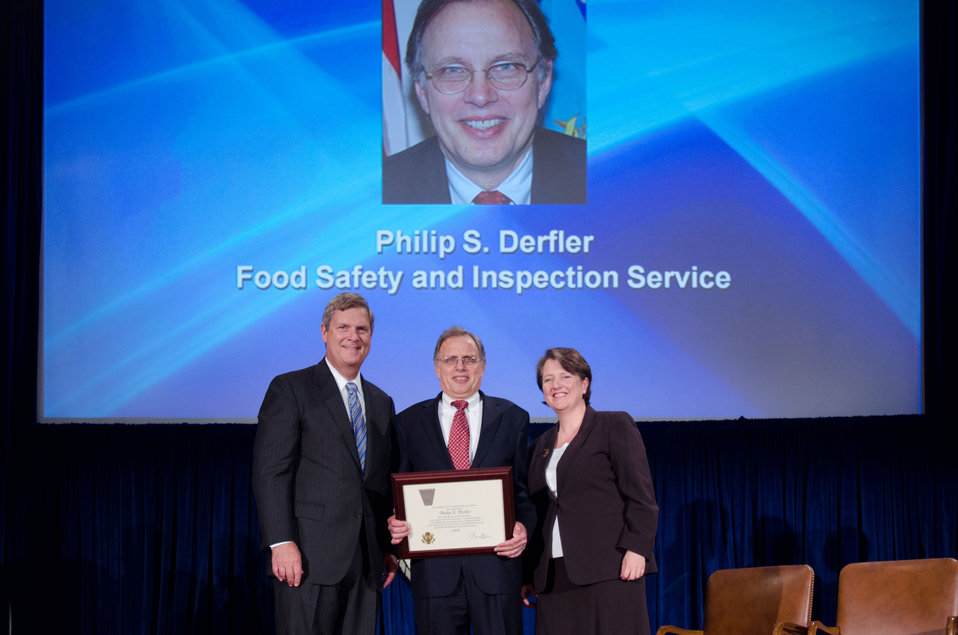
Agriculture Secretary Tom Vilsack (l) and Deputy Secretary Kathleen Merrigan (r), presents the Meritorious Executive Award to Phillip S. Derfler, Deputy Administrator for Food Safety and Inspection Service. The President of the United States of America has conferred on Phillip S. Derfler the rank of Meritorious Executive in the Senior Executive Service for sustained extraordinary accomplishment in management of programs of the United States Government and for leadership exemplifying the highest standards of service to the public reflecting credit o the career civil service. On Wednesday, September 14, 2011 in the Jefferson Auditorium at the US Department of Agriculture in Washington, DC.